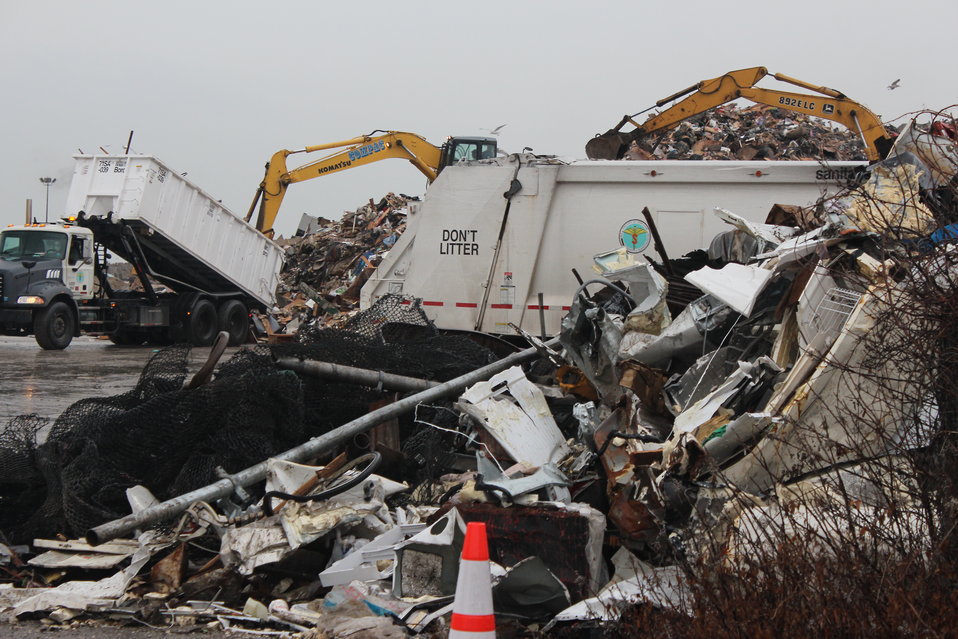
December 9, 2012 Close-up of Activity at Jacob Riis Park, Queens, New York

The City of New York managed most of the debris collected along Breezy Point and the Rockaways in Queens. To see the magnitude of this collection area, view from above: www.flickr.com/photos/usepagov/8392483718/in/photostream/